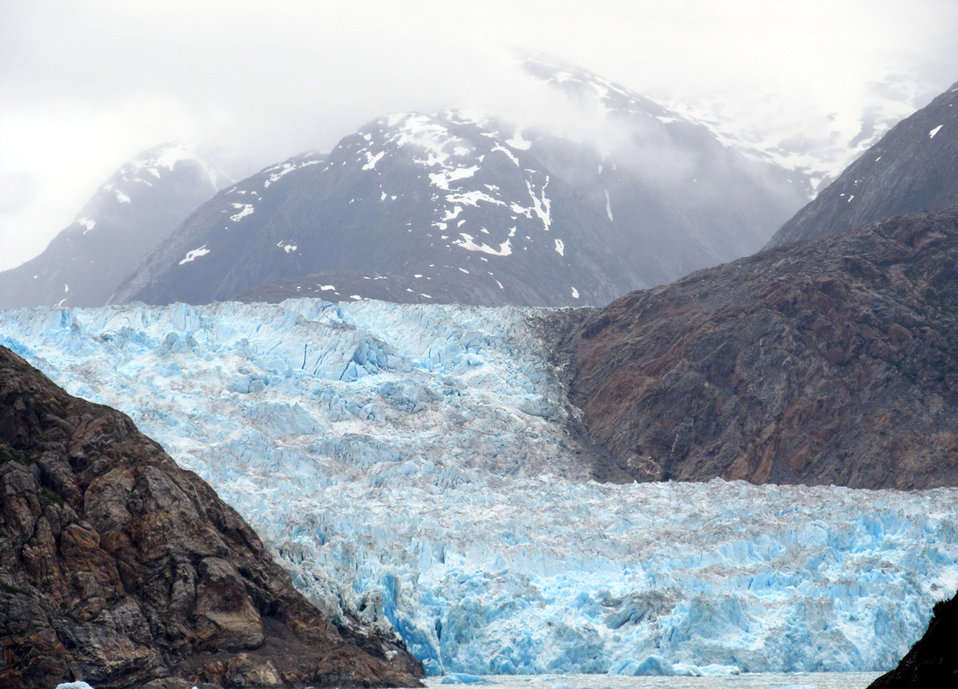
Tracy arm fjord glacier

The glacier at tracy arm fjord.